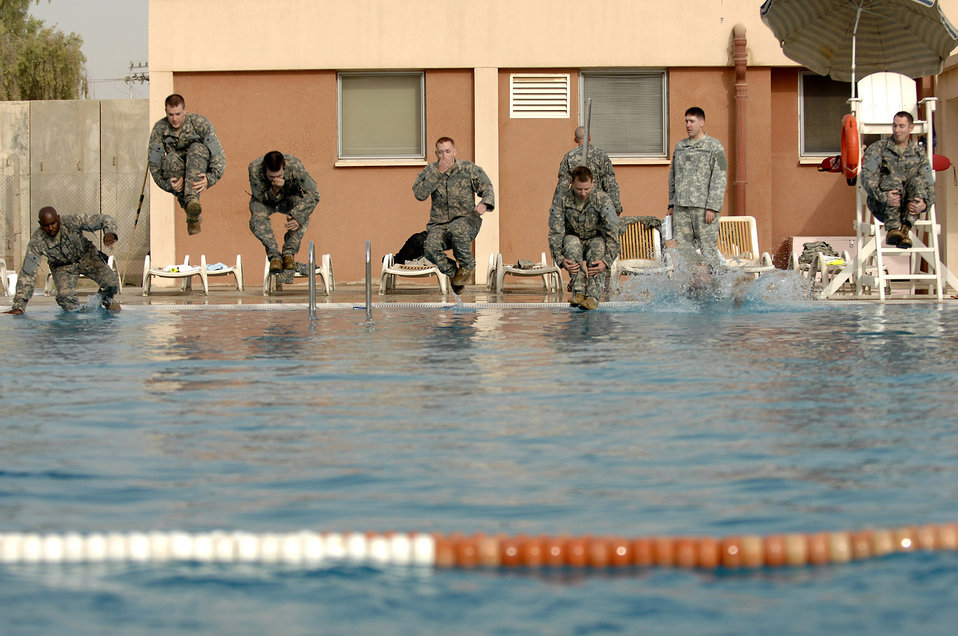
All Wet

Airmen from the 332nd Expeditionary Civil Engineer Squadron explosive ordnance disposal flight jump into the pool for water skills training at Joint Base Balad, Iraq, July 8. Performing the training in full uniform replicates what the circumstances could be during water operations.